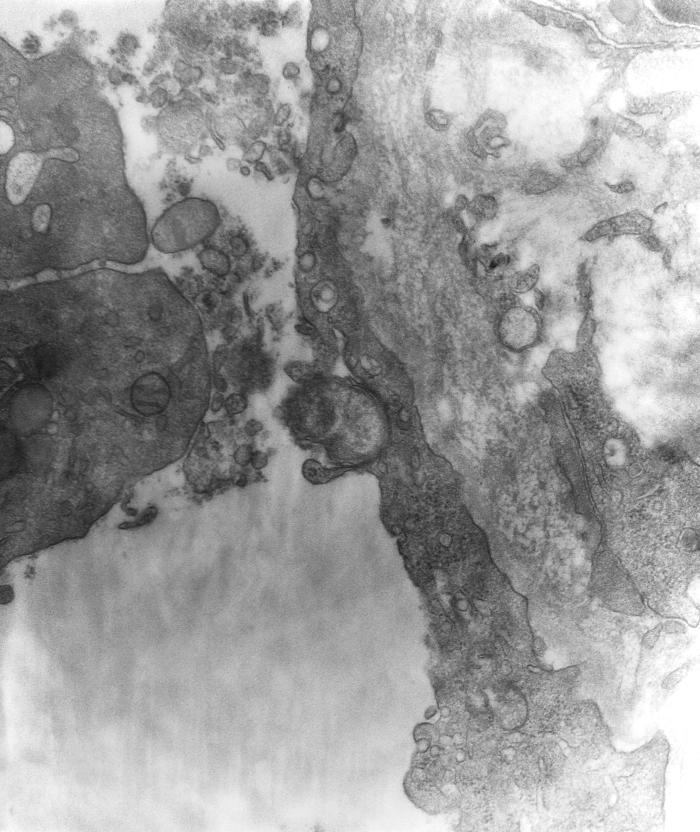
This 1976 transmission electron micrograph (TEM) depicted a peritoneal mesothelial cell from a mouse that had been experimentally infected intraperitoneally with Orientia tsutsugamushi rickettsial micro-organisms. Captured here in this TEM was the initiation of the process of phagocytosis being carried out on one of the O. tsutsugamushi micro-organisms.